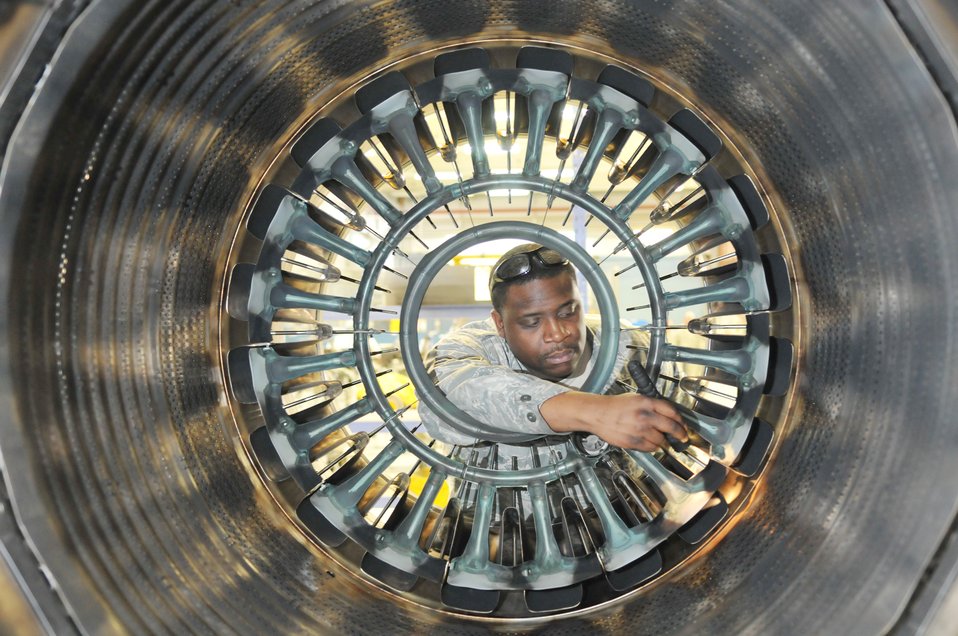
And it goes round and round

Staff Sgt. Christopher Matthews, 52nd Component Maintenance Squadron aerospace propulsion systems craftsman, inspects an F-16 Fighting Falcon exhaust nozzle March 16, 2010, at Spangdahlem Air Base, Germany. Once the nozzle passes quality assurance check, it can be installed on an F-16 engine.